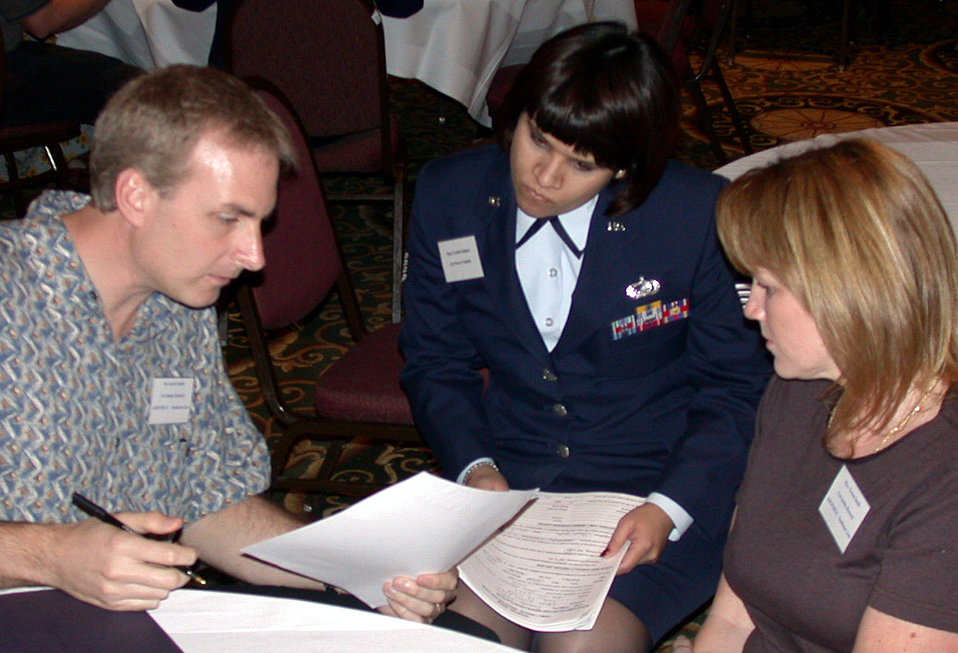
Casualty affairs

HOUSTON -- Staff Sgt. Cynthia Iniguez from the casualty office at the Air Force Personnel Center at Randolph Air Force Base, Texas, speaks with family members at a recent meeting for families of servicemembers missing from past wars. More than 150 Texas families met in Houston with military representatives and officials from the Defense POW/Missing Personnel office, the agency responsible for oversight of the recovery process.